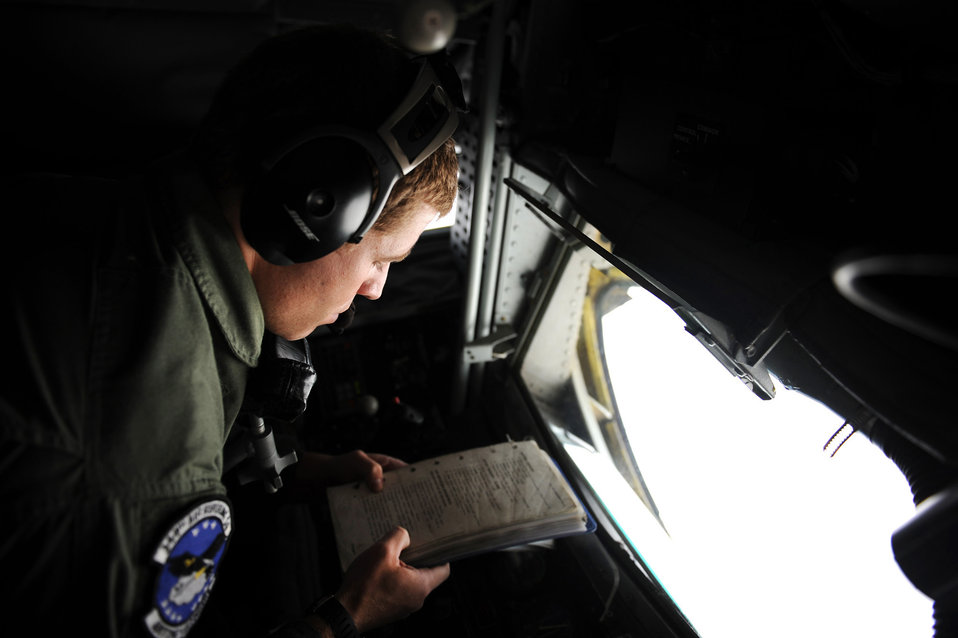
KC-135 Stratotanker refueling mission

Staff Sgt. Patrick Martin reviews a checklist before refueling a B1 Lancer on a KC-135 Stratotanker during a training mission April 21, 2010, near Northern New Mexico. Sergeant Martin is a boom operator assigned to the 344th Air Refueling Squadron at McConnell Air Force Base, Kan.